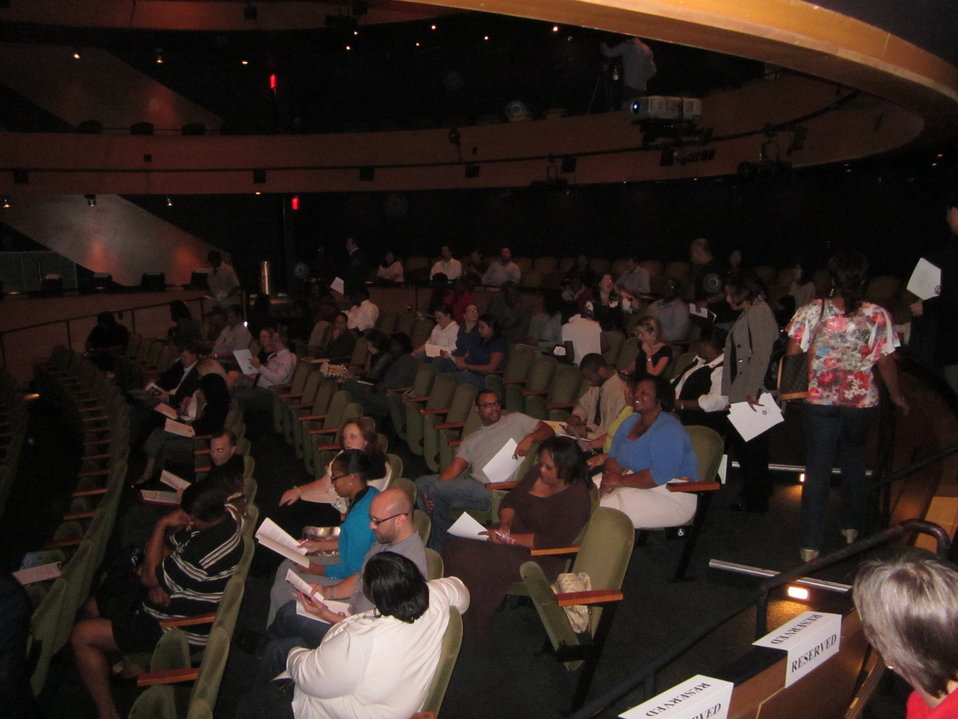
Baton Rouge Pics 014